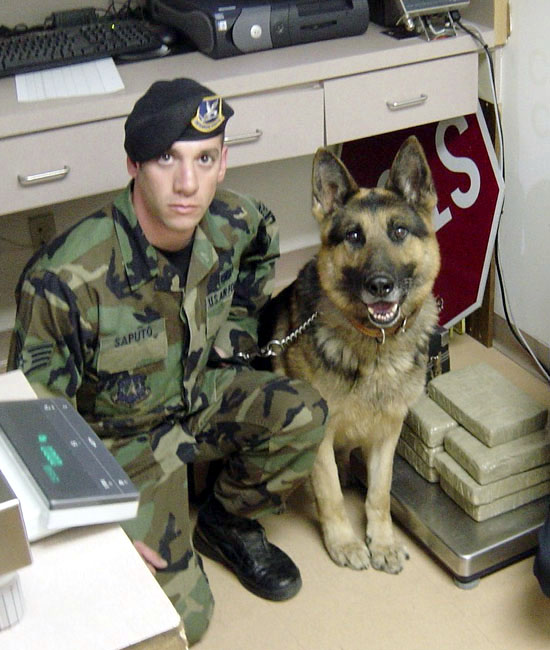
Team 'ruff' on drugs

MEXICAN BORDER -- Staff Sgt. Joseph Saputo and his military working dog, Nero, pose with more than 25 pounds of cocaine worth more than $375,000. The team found the drugs while on temporary duty supporting the U.S. Bureau of Customs and Border Protection here. They are assigned to the 21st Security Forces Squadron at Peterson Air Force Base, Colo.